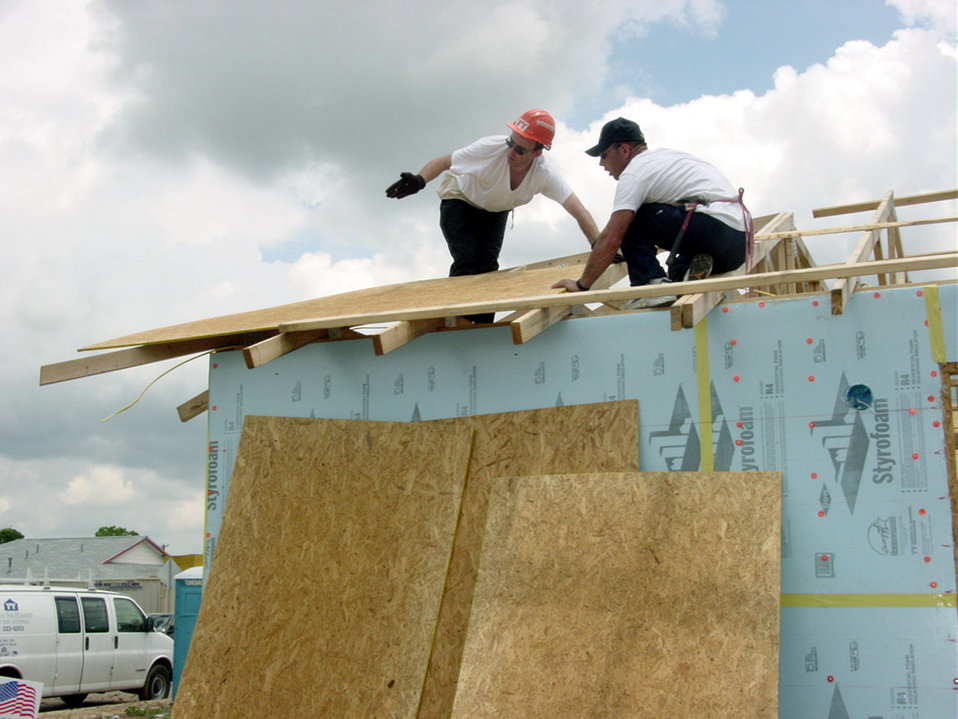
International aid

SAN ANTONIO -- Albanian students, 1st Lts. Gentjan Shehu and Xheladin Hoxha, work on the roof of a Habitat for Humanity house here May 8. Nine students from the Defense Language Institute at Lackland Air Force Base, Texas, took part in the project. The school's informational program lets students use their language skills by getting involved in the local community.